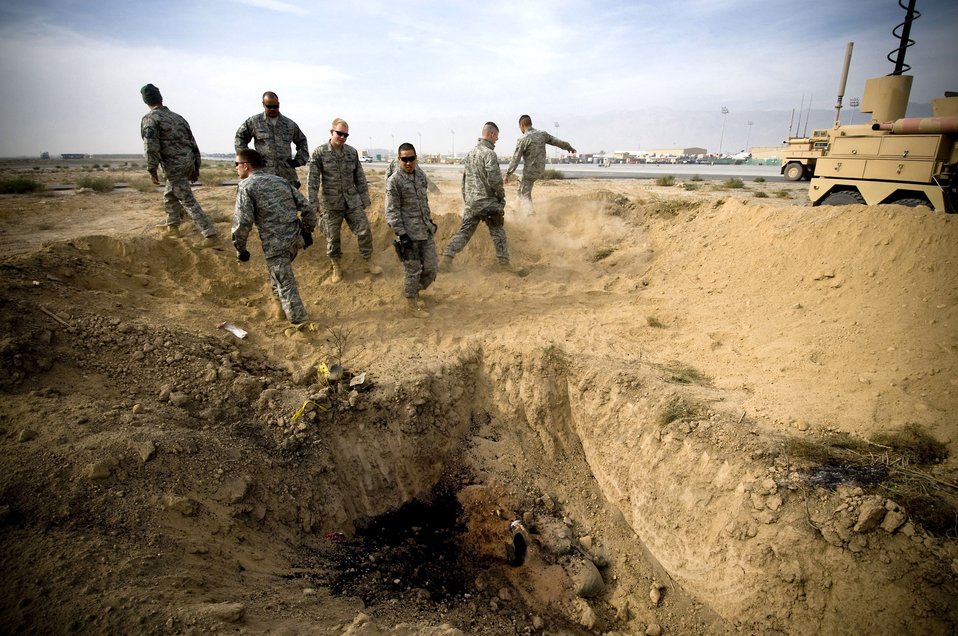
Airmen respond to buried threat in Afghanistan

The 755th Air Expeditionary Group Explosive Ordnance Disposal team inspects a controlled burn on the flightline Nov. 7 at Bagram Airfield, Afghanistan. The dirt berm built-up around the site helped to provide a barrier in the event of a full-scale or premature detonation.